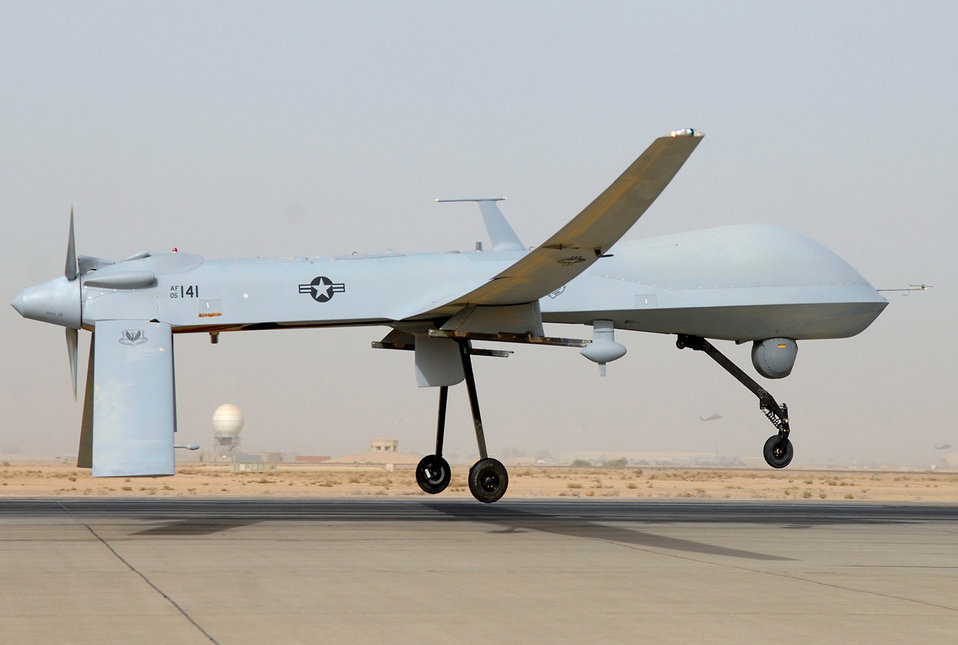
MQ-1 Predator

An MQ-1 Predator unmanned aircraft prepares for takeoff in support of operations in Southwest Asia. Air Force officials accepted MQ-1 Predator tail number 268, the last manufactured for the service, in a ceremony Mar. 3, 2011.